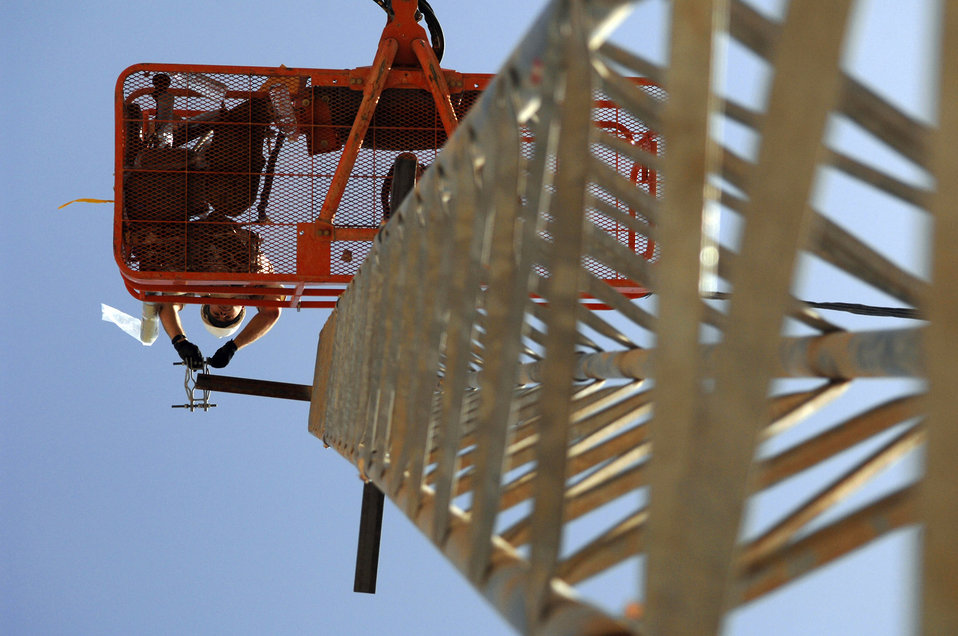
Radio up

Senior Airman Paul Martin installs the support structure for a high-requency radio antenna June 21 at Joint Base Balad, Iraq. The antenna will allow greater range when using land mobile radios which enhances the capabilities for ground-to-air operations. Airman Martin is a 332nd Expeditionary Communications Squadron ground radio maintainer deployed from Yokota Air Base, Japan.